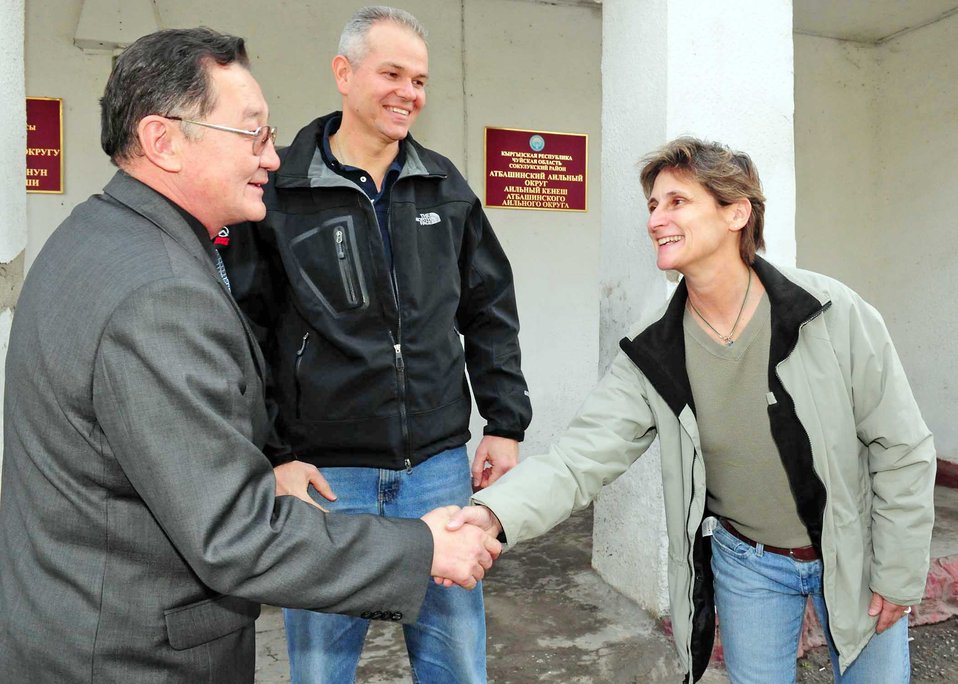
Manas Airmen deliver care packages to Kyrgyz villagers

Chief Master Sgt. Debra Liles shakes the hand of the mayor of Manas Village, March 18, 2010, in Manas Village, Kyrgyzstan. Chief Liles is the 376th Expeditionary Mission Support Group superintendent.